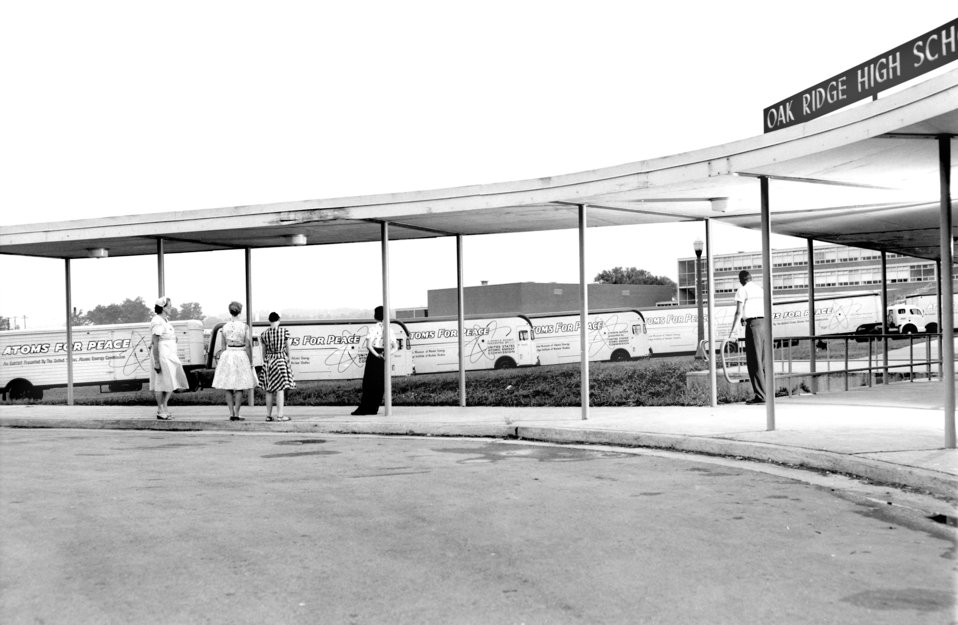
Atoms for Peace Exhibit Trucks 1956 Oak Ridge

56-804 DOE photo Ed Westcott 8-2-1956 Oak Ridge Tennessee